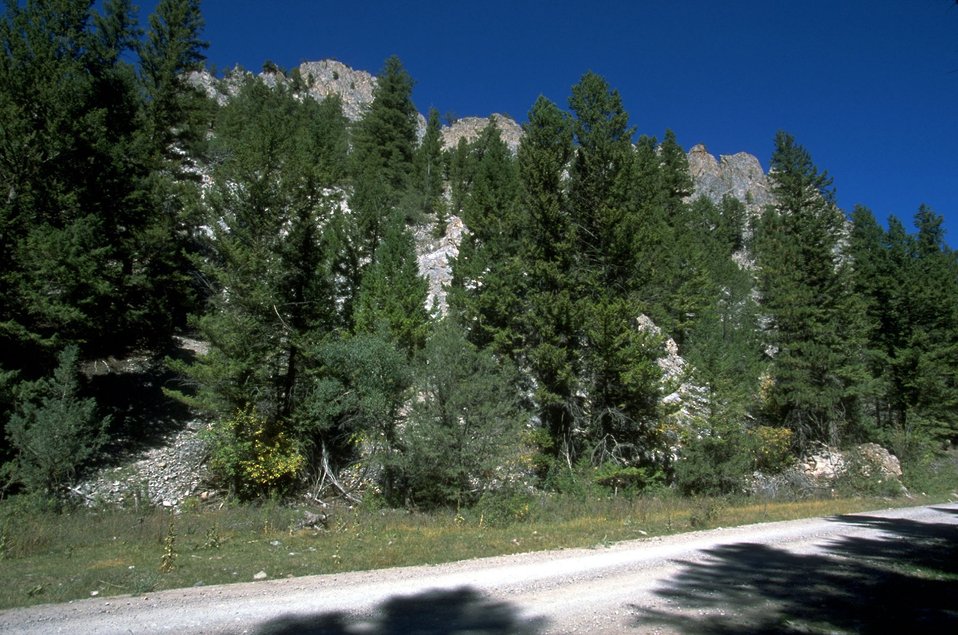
Rattler Gulch-Limestone Cliffs ACEC